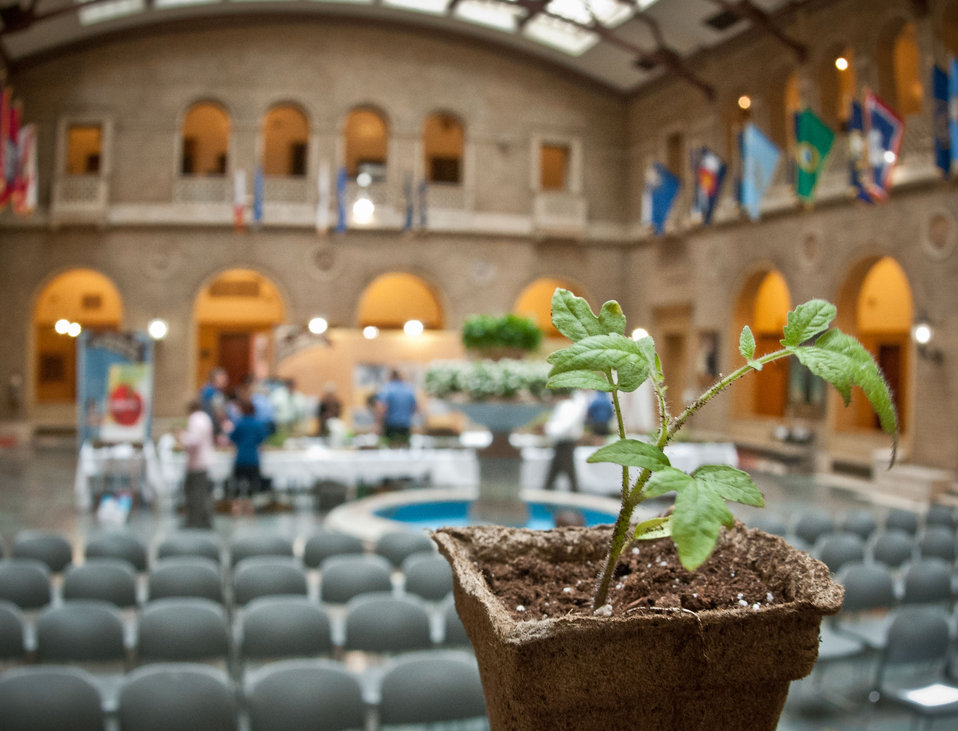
The People’s Garden Initiative and volunteer Executive Master Gardeners distributed ‘Abraham Lincoln” Tomato seedlings that the People’s Garden Initiative is distributing to USDA employees in celebration of the 150th Anniversary of the U.S. Department of Agriculture, on Tuesday, May 15, 2012 in Washington, D.C., on this day, 150 years ago, President Abraham signed the Department into existence during the Civil War. In 1923 the H.W. Buckbee seed company of Rockford, Illinois introduced an heirloom variety named in honor of Illinois’ Greatest Son – Abraham Lincoln. The plant produces large beefsteak tomatoes in about 90 days. Volunteer Executive Master Gardeners planted and cultivated more that 3,000 seedlings ranging in size from one inch to more than a foot tall, so people could choose the best ones to transport home and to stagger the harvest by selecting a small and large seedling. One of the hopes of this event is to share the joys of gardening and harvesting, as well as the opportunity to share your harvest in your community. Seed packets are being distributed to People’s Gardens worldwide.